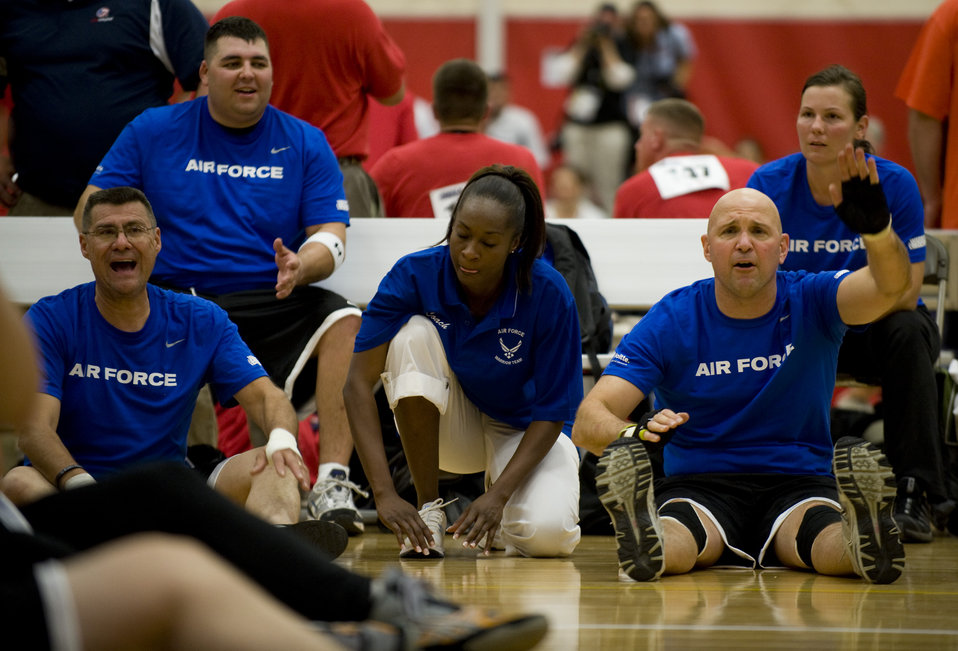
SOCOM defeats Air Force

The Air Force sideline cheers on their team during sitting volleyball at the 2011 Warrior Games in Colorado Springs, Colo., May 17. The Air Force played the U.S. Special Operations Command team, losing the series 2 games to 1.